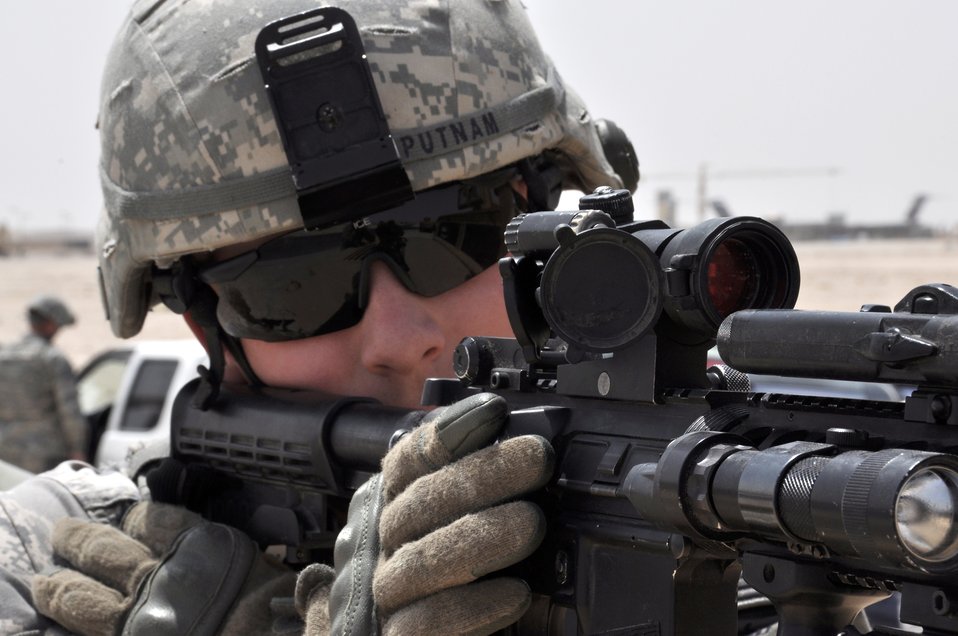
Eye on the prize

Staff Sgt. Travis Putnam, a 379th Expeditionary Forces Squadron member, stands ready March 23, 2010, during an exercise at an air base in Southwest Asia.